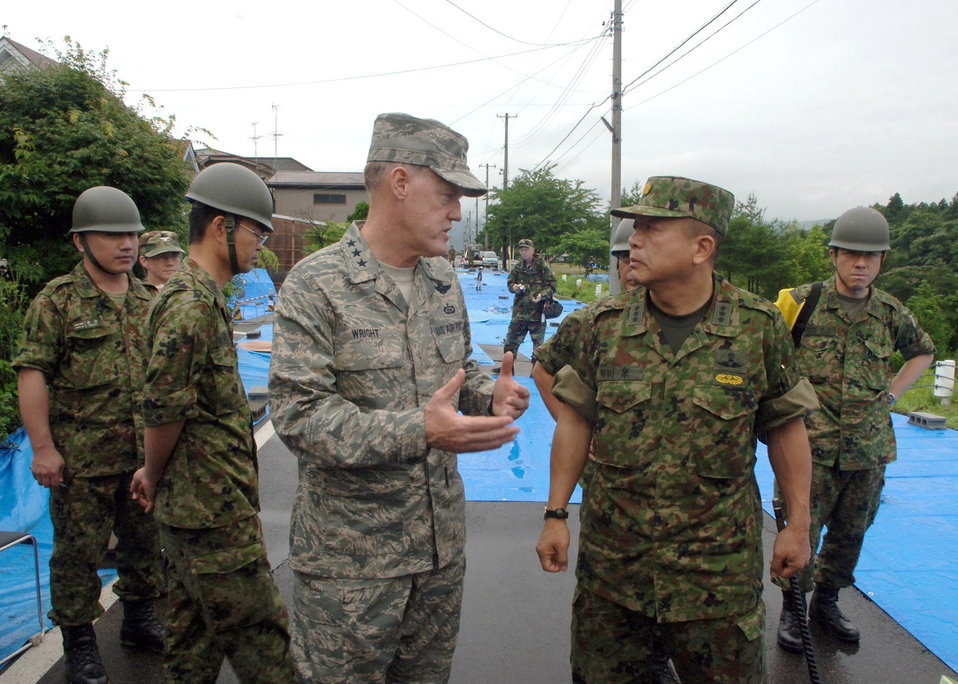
Commander visits Japan earthquake relief team

Lt. Gen. Bruce Wright and Lt. Gen. Kazushige Izumi view the damage July 21 caused by an earthquake that hit Niigata Prefecture in Japan on July 16. They were visiting a relief team providing assistance to the citizens affected by the earthquake. General Wright is U.S. Forces Japan commander and General Izumi is commander of the Japan Eastern Army.